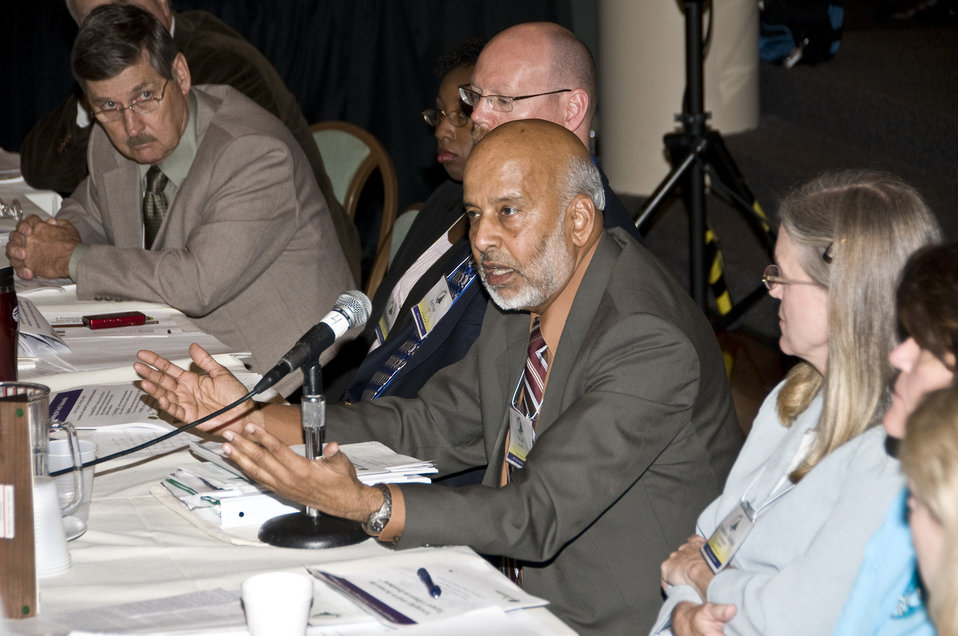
Recovery Act Boosts Savannah River Site’s Thriving Stakeholder Relationships

The Citizens Advisory Board provides SRS and regulators advice on cleanup decisions and strategies, based upon input and recommendations from national and state agencies.